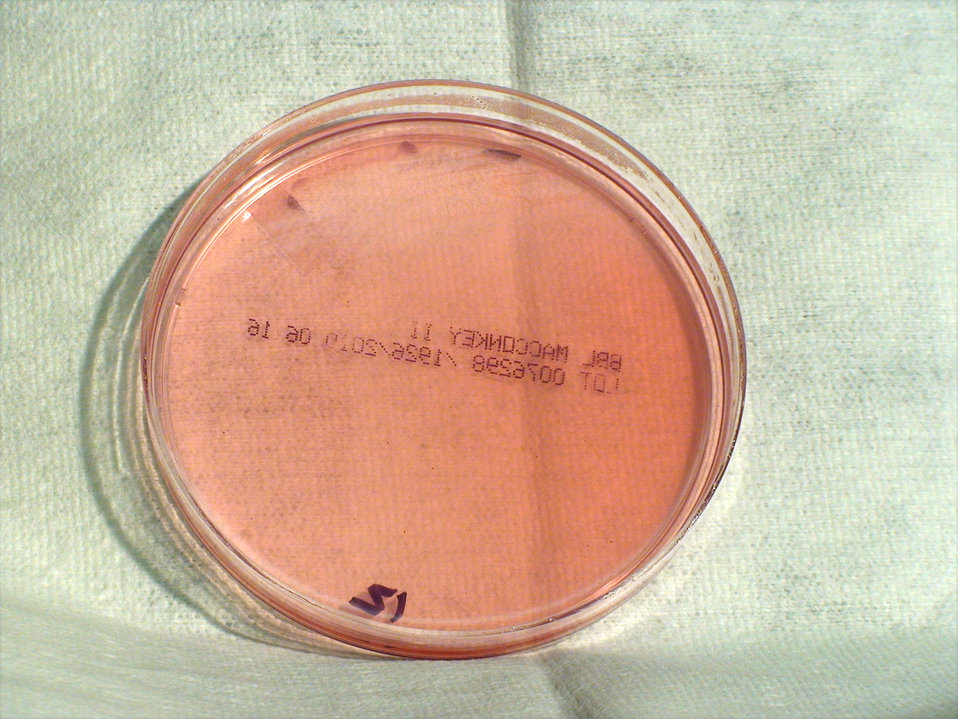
This photograph depicts the colonial morphology displayed by Gram-negative Brucella suis bacteria, which was grown on a medium of MacConkey agar, for a 24 hour time period, at a temperature of 37�C. See PHIL 12482 and 12483, for closer views of these bacterial colonies. Brucella spp. bacteria are pathogenic towards humans, and cause a disease known as brucellosis.